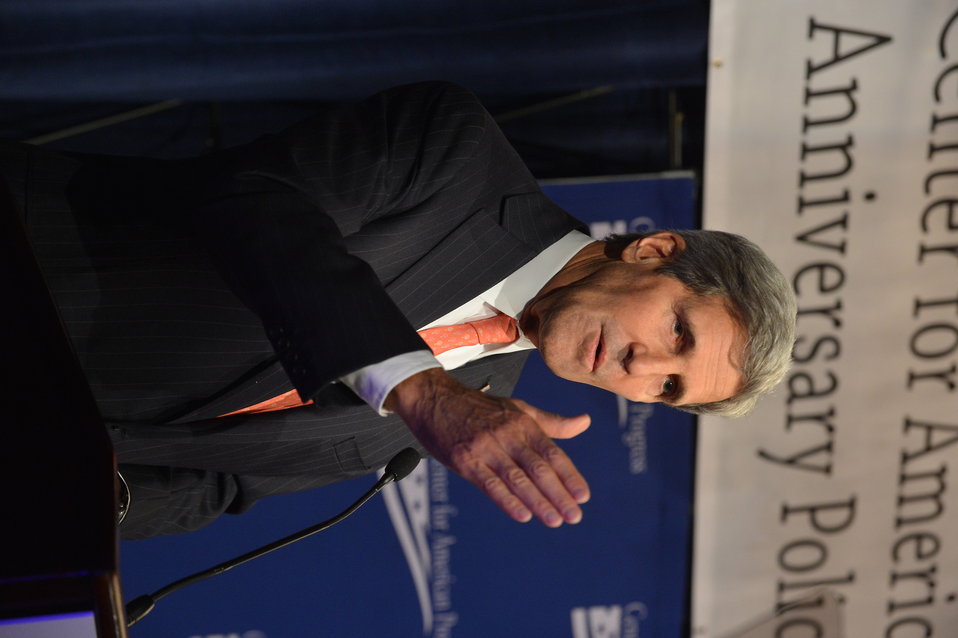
Secretary Kerry Delivers Remarks at the Center for American Progress

U.S. Secretary of State John Kerry delivers remarks at the Center for American Progress’ 10-year Anniversary Policy Conference in Washington, D.C., on October 24, 2013.